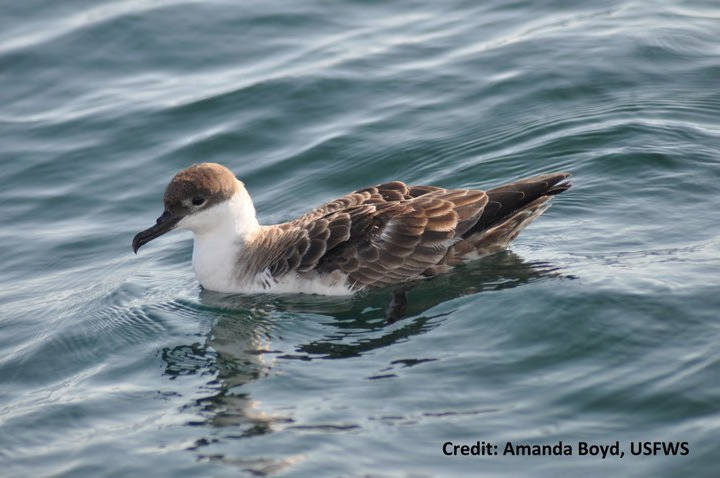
Greater Shearwater, nantucket refuge